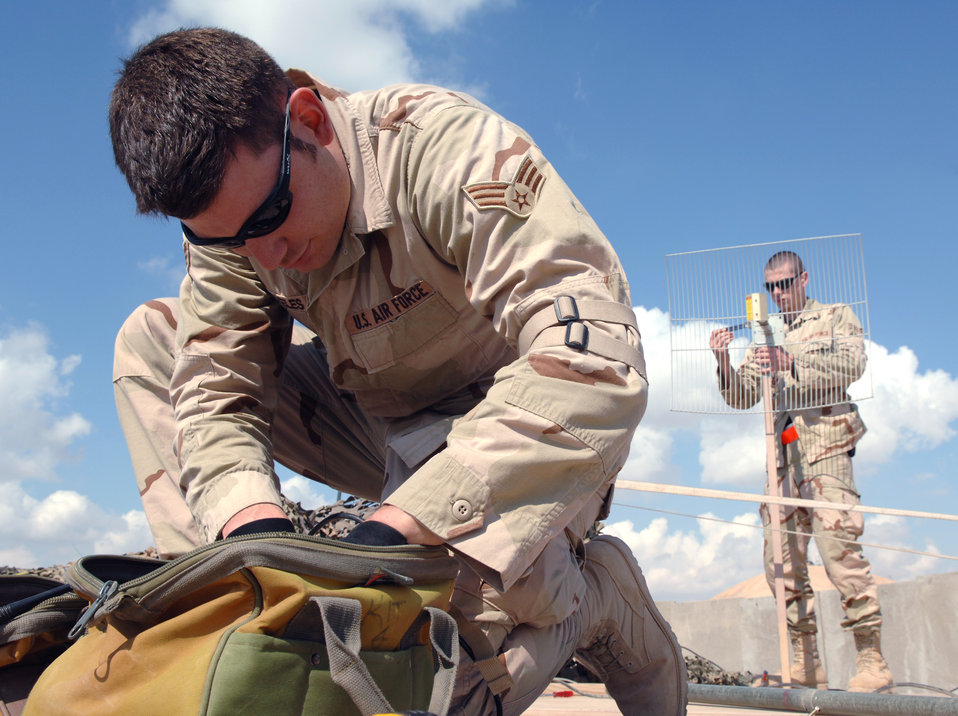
Can you hear me now?

Senior Airman Ricardo Reveles and Airman 1st Class Sven Bickham install an antenna and align a satelite dish for the best signal Feb. 17 at Balad Air Base, Iraq. The Airmen are 332nd Expeditionary Communications Squadron satelite communication journeyman and support 50 installations in the region.